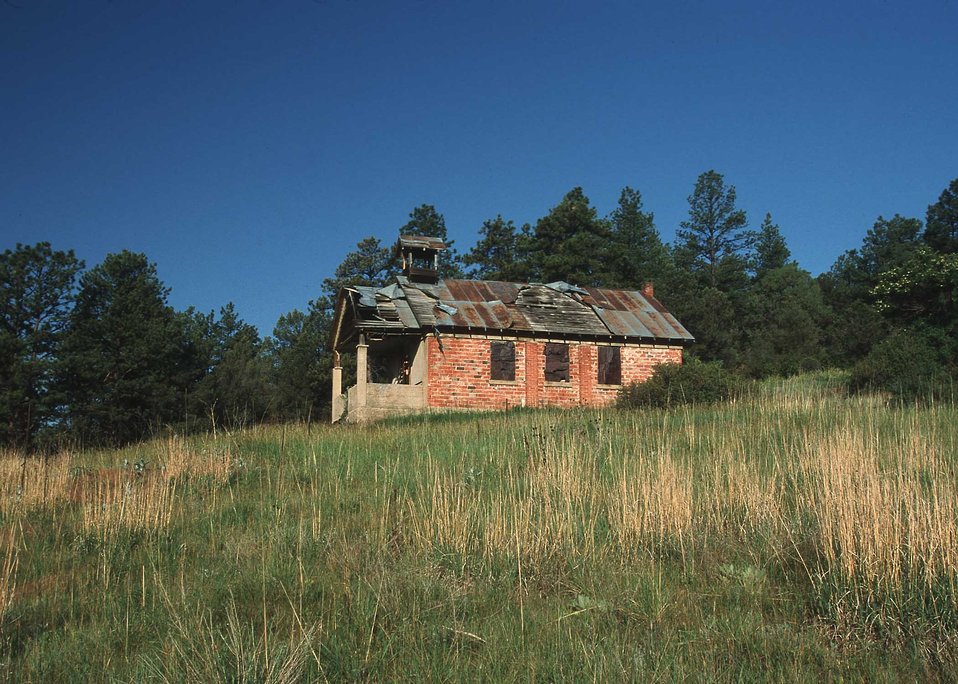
Abandoned School near Spanish Peaks, CO.